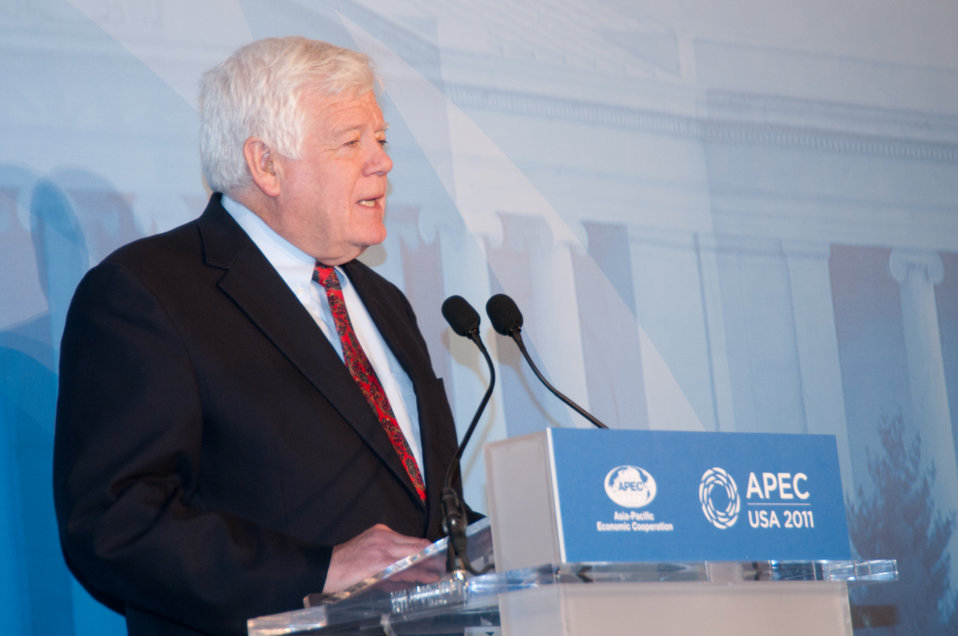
Congressman McDermott Speaks During Welcome Reception

Congressman Jim McDermott of Washington speaks at the First Senior Officials Meeting (SOM1) and Related Meetings of the APEC 2011 USA Host Year during the welcome reception at the Ronald Reagan Building in Washington, D.C., on March 9, 2011. [Fredde Lieberman photo]